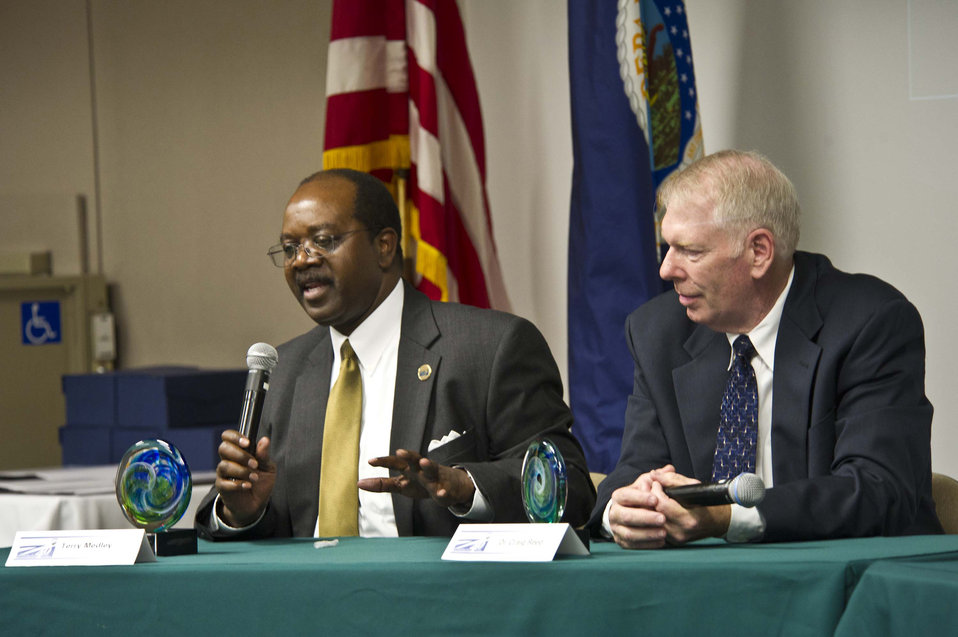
Former U.S. Department of Agriculture (USDA) Animal and Plant Health Inspeciton Service (APHIS) Administrator Terry Medley (1996-1998 )shares insights about his experiences as former USDA APHIS Adminnistrator Craig Reed (1998-2001) looks on on at 40th anniveary of APHIS on May 16, 2012.